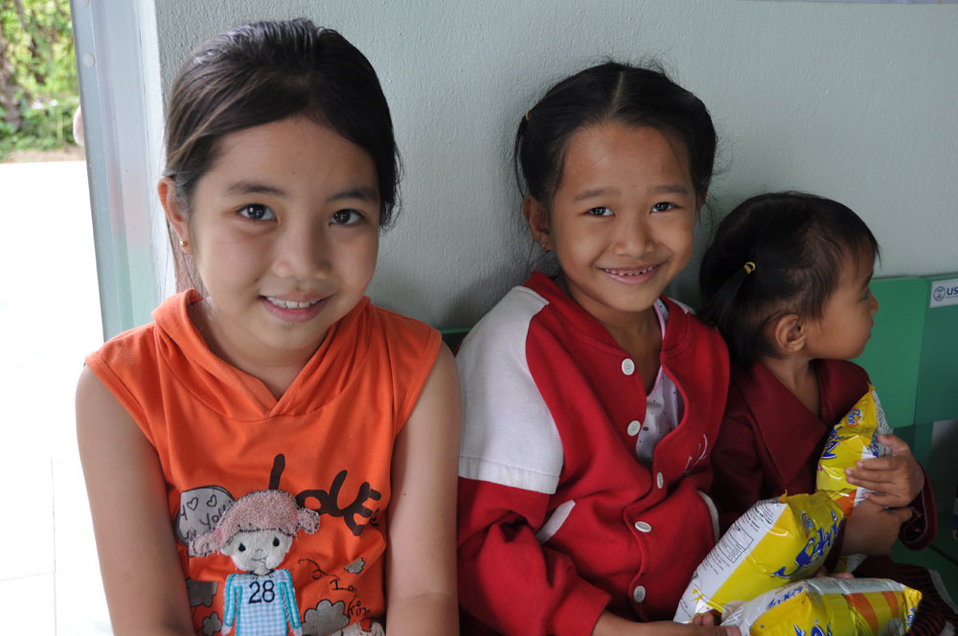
Children in Kon Tum, Vietnam, enjoy their new pre-schools refurbished with USAID funding